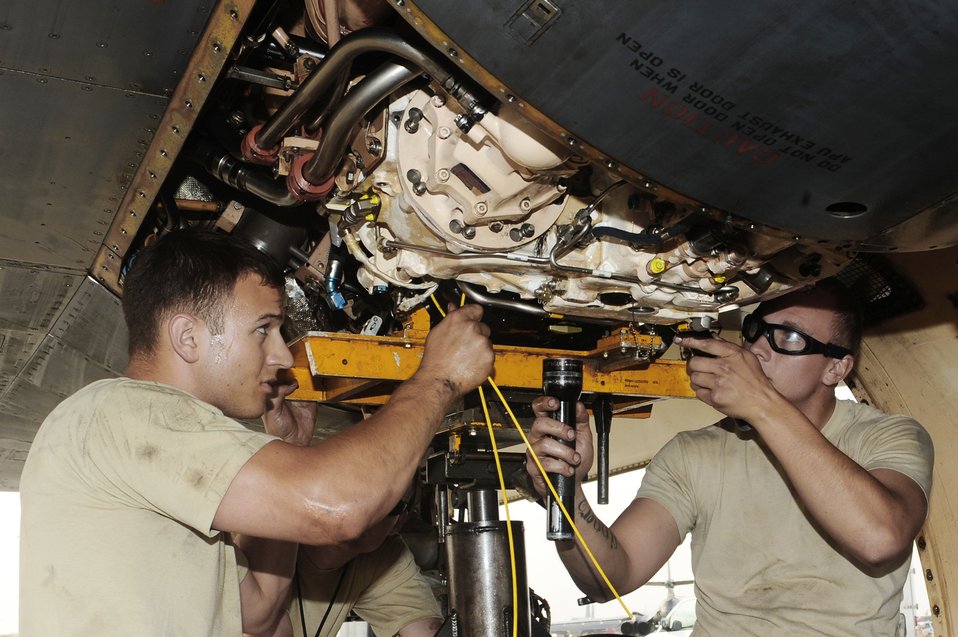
Pull this wire

Senior Airman Geoffrey Hirscheld (left), electro and environmental technician, and Senior Airman Steven Kossar, jet engine mechanic, change a constant speed drive on a B-1B Lancer at an air base in Southwest Asia March 2, 2010. Both Airmen are deployed to the 34th Aircraft Maintenance Unit.